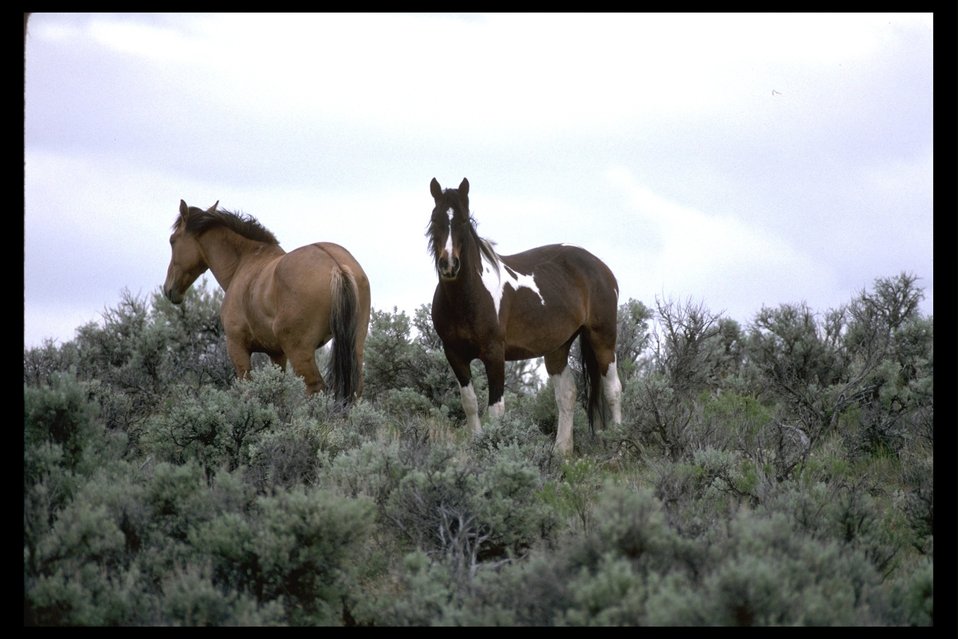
South steens HMA horses on the range.